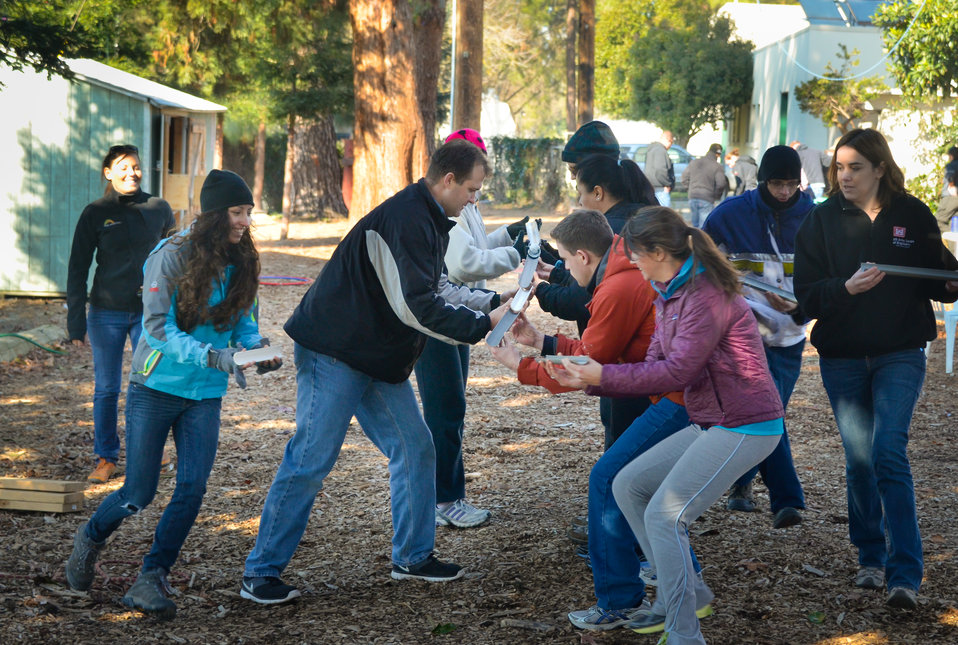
LDP level I ropes course activities

U.S. Army Corps of Engineers Sacramento District employees participate in ropes course activities at California State University-Sacramento, Jan. 16, 2013, as part of the district’s leadership development program.
The program is designed to introduce participants to the Army’s expertise in developing skilled, tested and character-based leaders at all levels and across all functional levels.